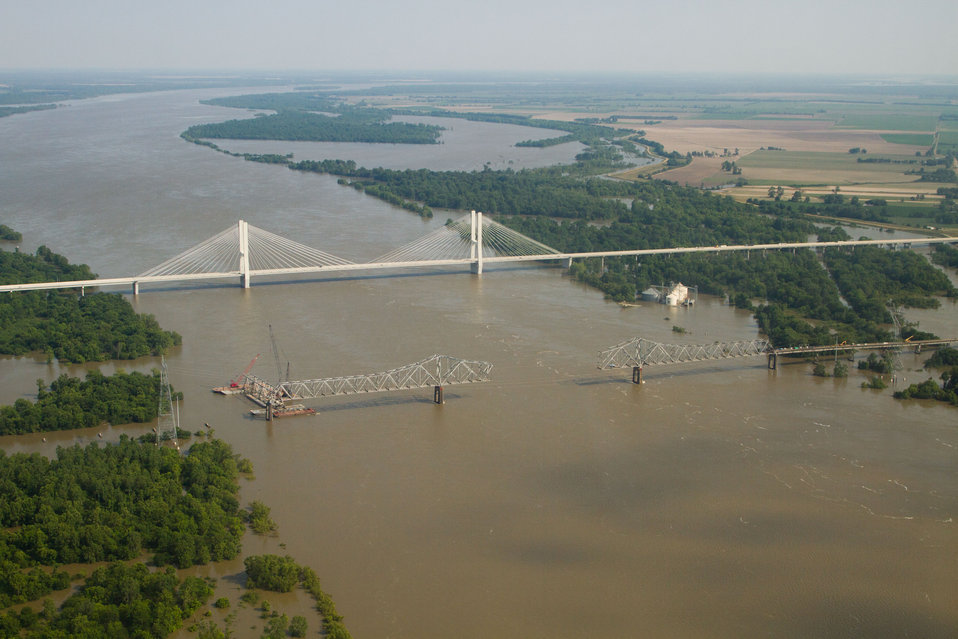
Aerial view of the Greenville Bridge spanning the Mississippi River at flood levels, on Thursday, May 19, 2011. Riverfront in Greenville, Mississippi avoided major damage with temporary levees around specific structure. The aerial platform was a UH-60 Blackhawk commanded by Col. Kennedy and his flight crew from the Army Aviation Support Facility #1 at Hawkins Field in Jackson.